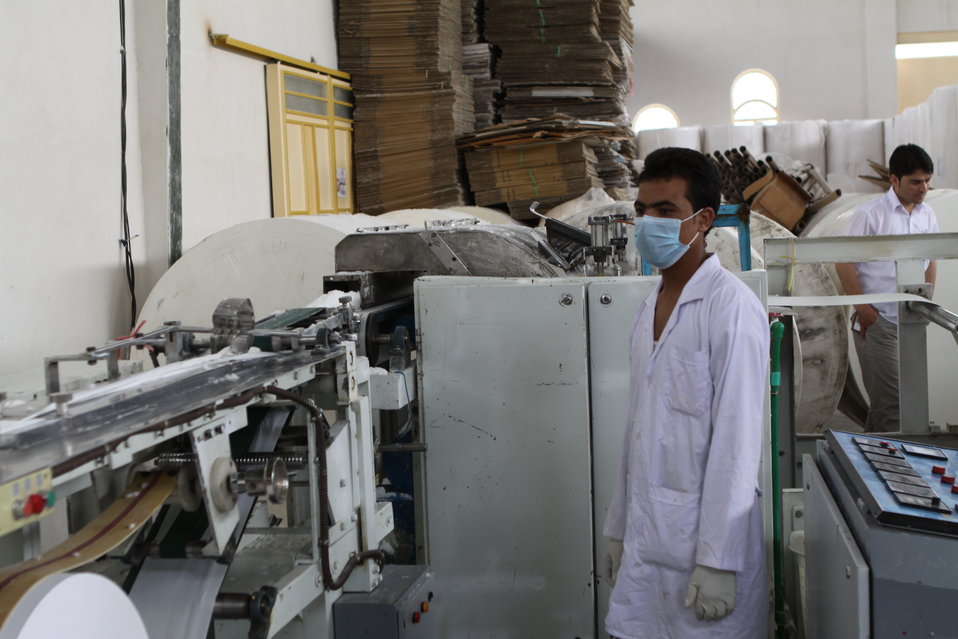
100525 Hirat Marble Conference 808